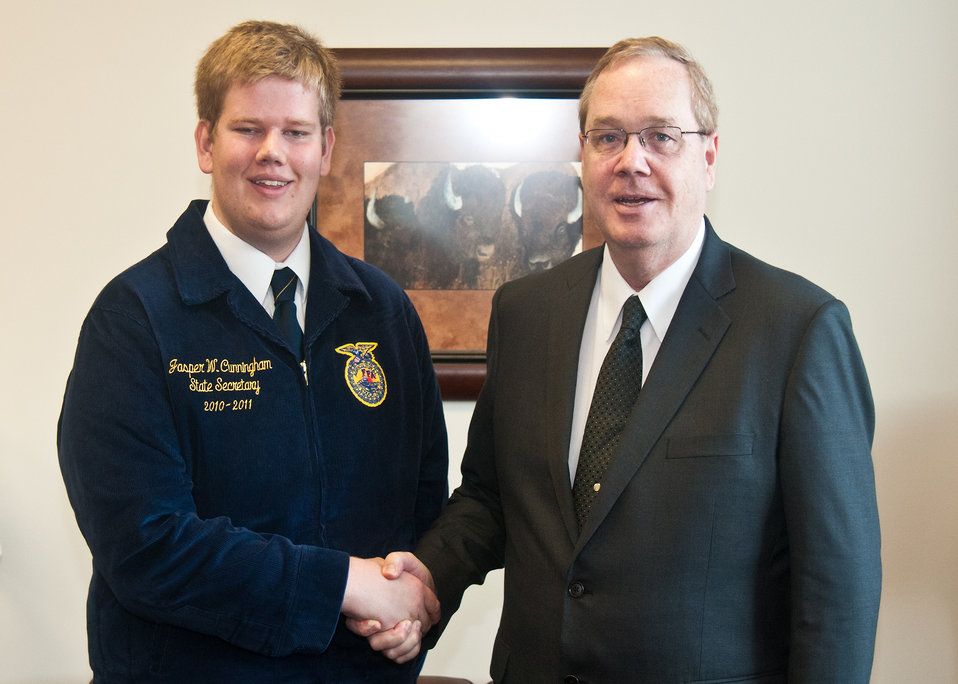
Junior at Michigan State University, Michigan FFA National Officer candidate and owner of the Seed Boy Seed Company Jasper Cunningham meets with Agriculture Under Secretary for Rural Development (RD) Dallas Tonsager at the U.S. Department of Agriculture (USDA) in Washington, D.C. on Aug. 23, 2012. Cunningham was a recipient of USDA’s RD Ag Entrepreneurship Award in 2010 that enabled him to establish a record keeping and inventory tracking system for his business and improve his customer base.